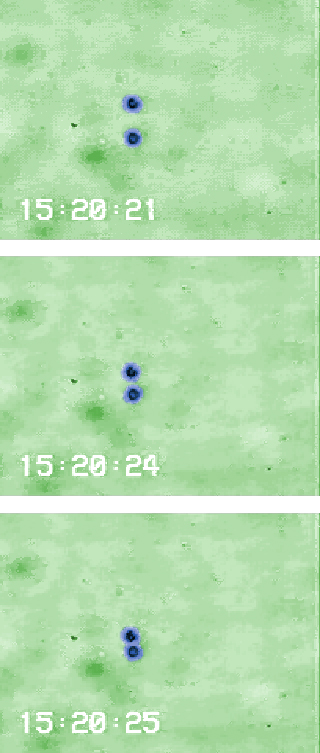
'Micro-boxes' of Water Used to Study Single Molecules

Prodded by optical tweezers, two 'hydrosomes' move together and fuse to mix their contents, in an experiment using water droplets as miniscule boxes for manipulating small numbers of biomolecules for nanobiochemistry.